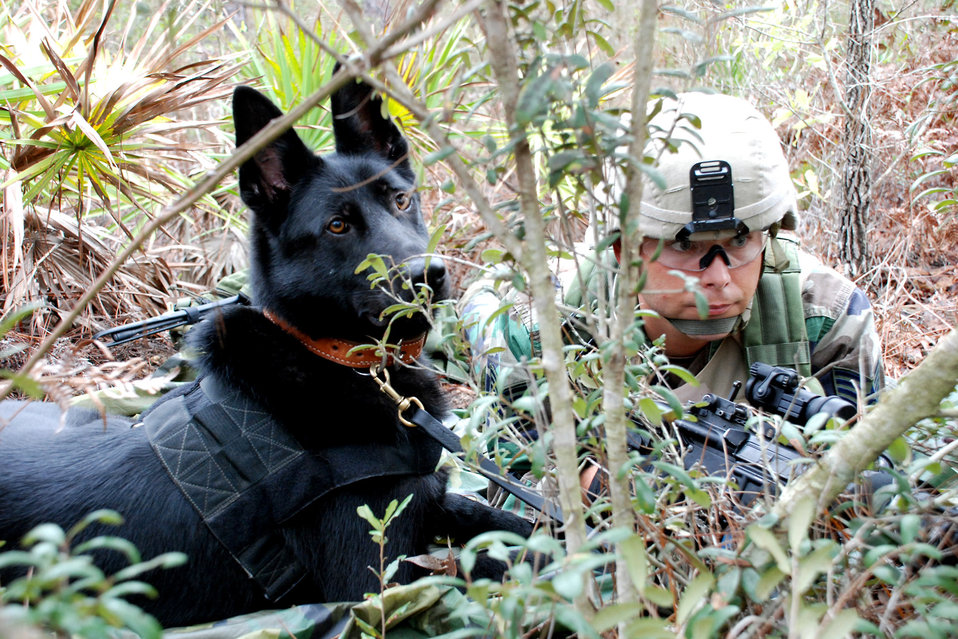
Training goes to dogs

Tech. Sgt. Michael Jones and Blacky hide during a lookout post/observation post assignment for a Brave Defender training scenario Oct. 23 at Eglin Air Force Base, Fla. Sergeant Jones is the kennel master for the 72nd Security Forces Squadron at Tinker AFB, Okla.